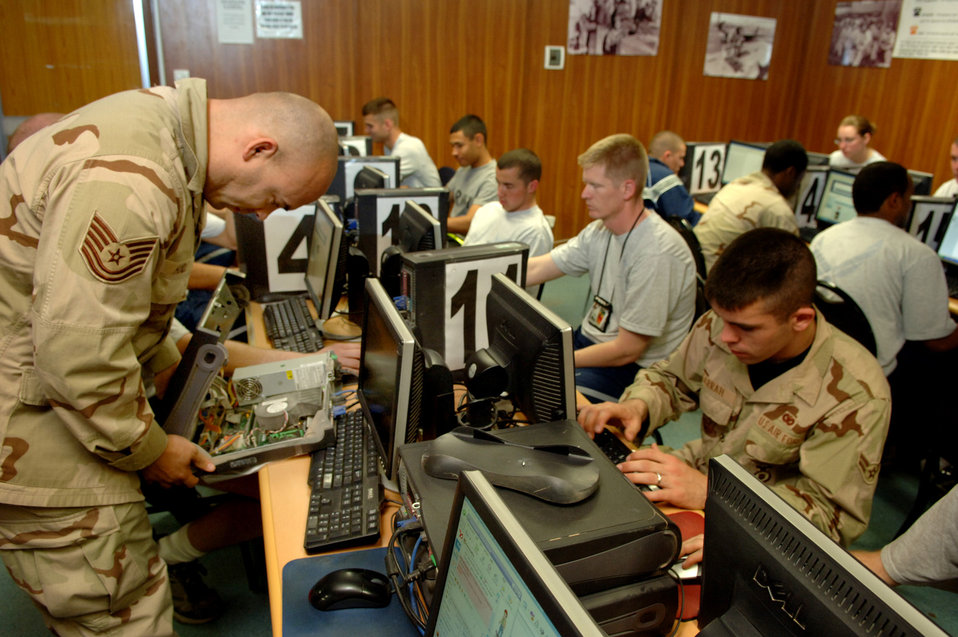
Services Airmen keep morale high in Iraq

Tech. Sgt. Clifton Hundley repairs one of the Balad Cyber Cafe's computers. The cafe helps 332nd Air Expeditionary Wing Airmen keep in touch with loved ones and friends back home via Internet and telephone service for morale calls. Sergeant Hundley is a 332nd Expeditionary Services Squadron client support administrator and cafe general manager deployed from the 18th Communications Squadron at Kadena AB, Japan.